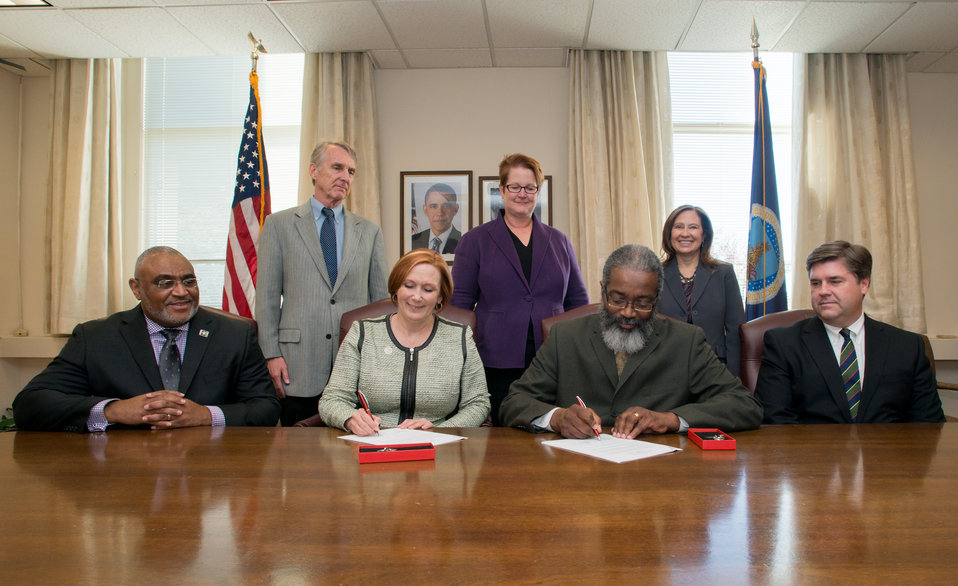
Signing of a Memorandum Of Understanding (MOU) with (right-left) Federal Managers Association (FMA) Executive Director Todd V. Wells, U.S. Department of Agriculture (USDA) Assistant Secretary for Administration Dr. Gregory Parham, FMA National President Patricia J. Niehaus, and USDA DM Deputy Assistant Secretary for Administration Malcom Shorter on Wednesday, Nov. 21, 2013 at USDA headquarters in Washington, D.C. Also witnessing the signing are (right-left) Office of Human Resources Management (OHRM) Provost Karlease E. Kelly, Deputy Director Bobbi Jeanquart, and DM Assistant Secretary for Administration Chief of Staff Curtis Wiley.